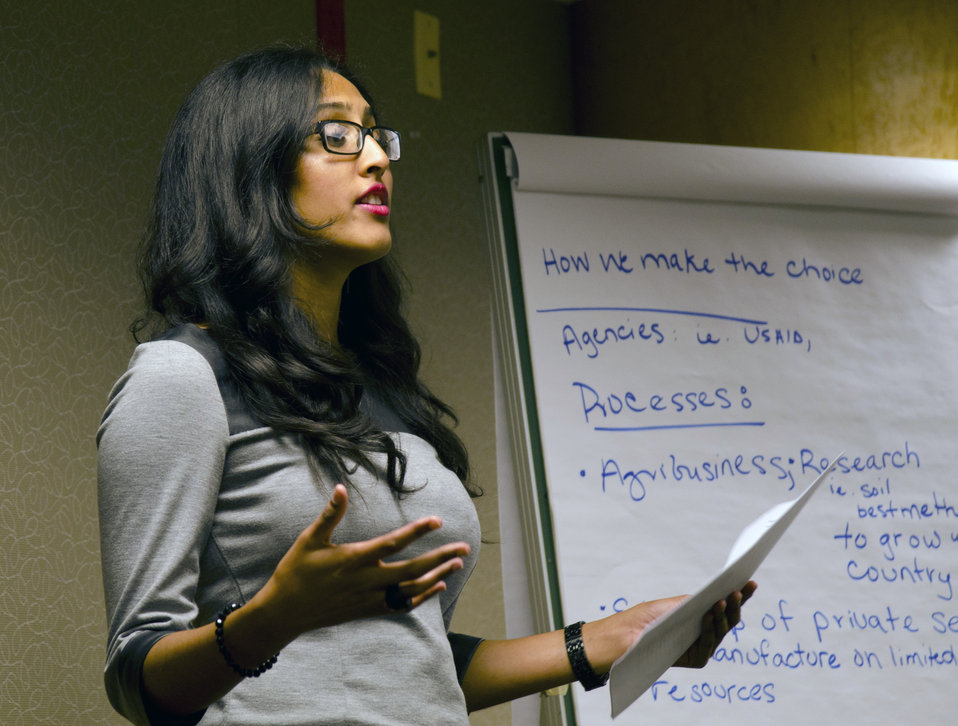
U.S. Department of Agriculture (USDA) Food Nutrition Service (FNS) intern Ileana Alamo makes remarks for her group at the USDA Internship Program Listening Session held in USDA’s South Building in Washington, D.C. on Monday, August 7, 2012. The purpose of the USDA Internship Program Listening Session is to provide interns with a forum to express their views about their experiences as a USDA intern. These young people will be among the most promising future USDA leaders and participate in an individual discussion and group session that will develop leadership skills.